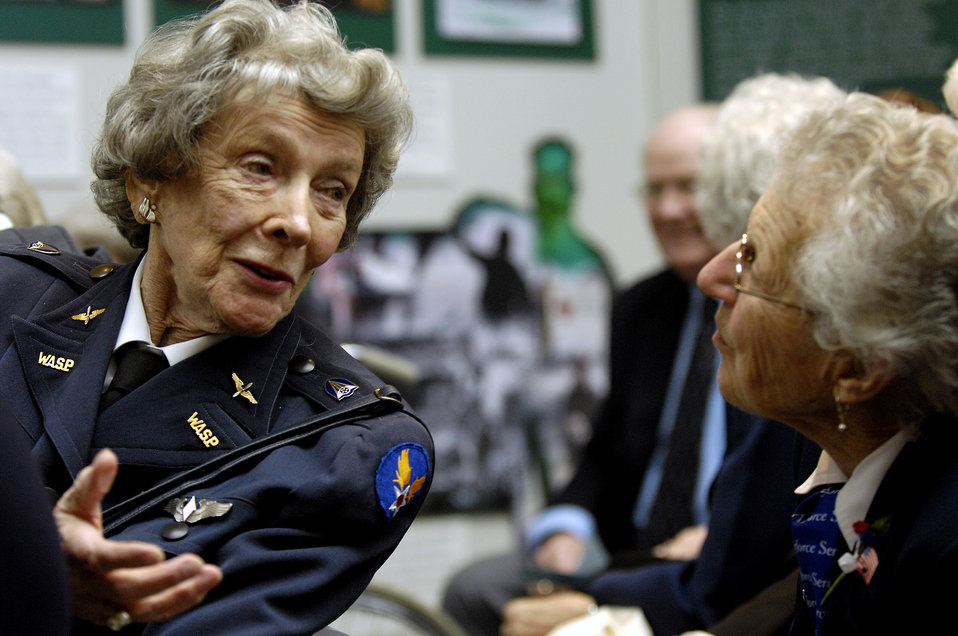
WASP exhibit opens in Arlington

Bernice Haydu and Lillian Yonally, World War II Women Airforce Service Pilots, visit while attending the